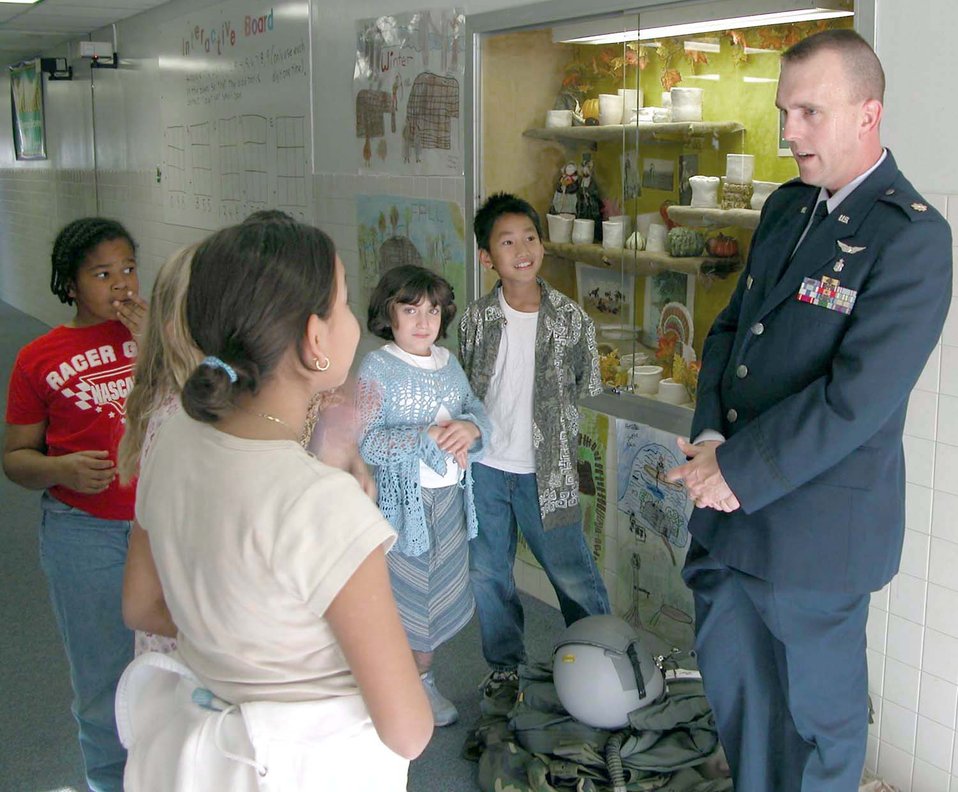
Baghdad Buddy

WASHINGTON -- Maj. Mike Lundy talks with a few of his